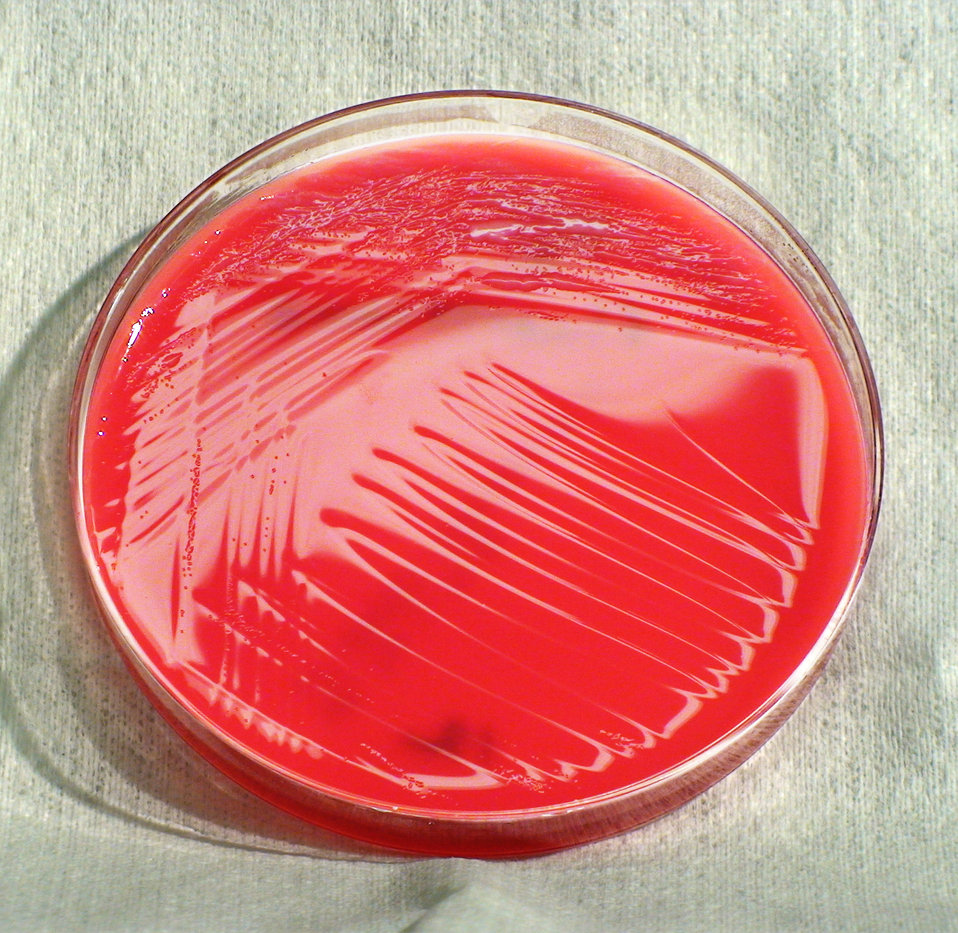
This photograph depicts the colonial morphology displayed by Gram-negative Pseudomonas fluorescens bacteria, which was grown on a medium of sheep's blood agar (SBA), for a 24 hour time period, at a temperature of 37�C. See PHIL 12458, for a closer view of these bacterial colonies.